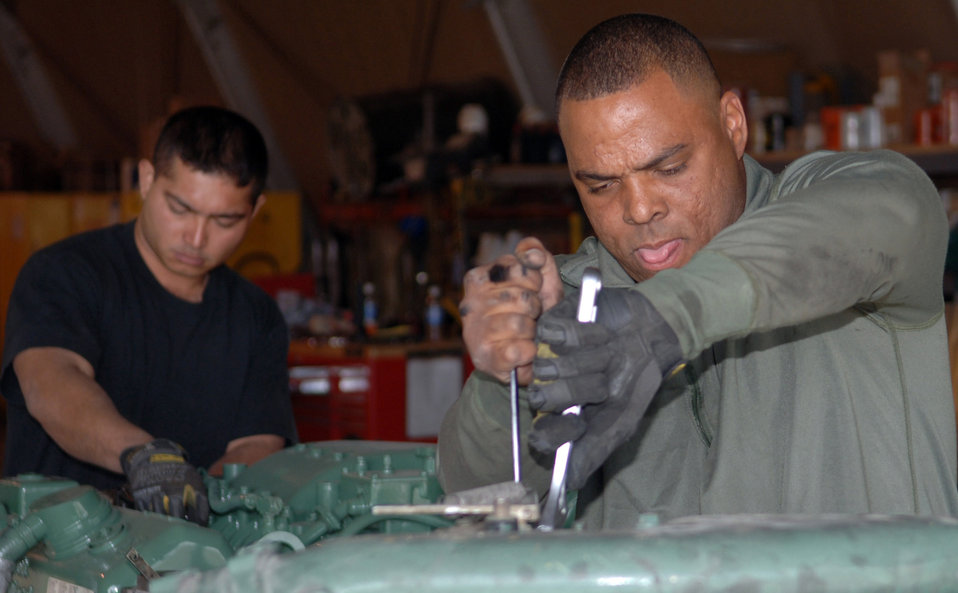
Mechanics work to keep vehicles in motion

Staff Sgts. Andre McDonald, front, and Fernando Mendiola place engine coolant fittings from an old 60K aircraft loader engine onto a new one. The sergeants are assigned to the 455th Logistics Readiness Squadron vehicle management flight. Sergeant Mendiola is a material handling equipment mechanic and Sergeant McDonald is a multipurpose vehicle mechanic.